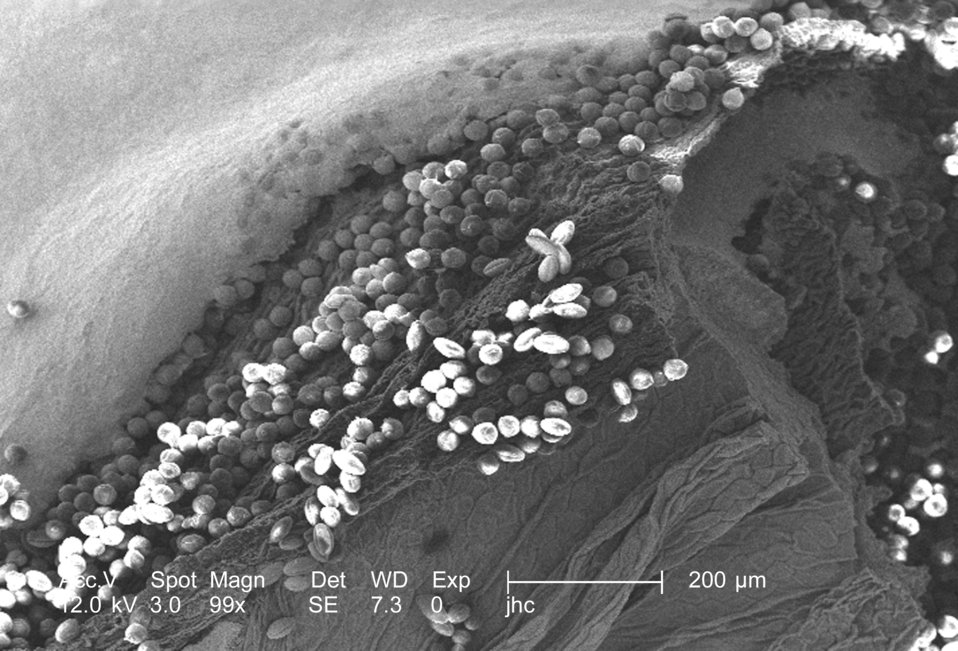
At a low magnification of 99x, this scanning electron micrograph (SEM) revealed some of the morphologic ultrastructure found amongst a collection of pollen found within the dehisced, or split open, anther of a yellow "Fireworks" sundrops, Oenothera fruticosa flower. Amongst this grouping were pollen grains representing various stages of drying through which these pollen grains pass as they mature. The drying of the grains changes their shape making them more elliptical-shaped, and less circular.